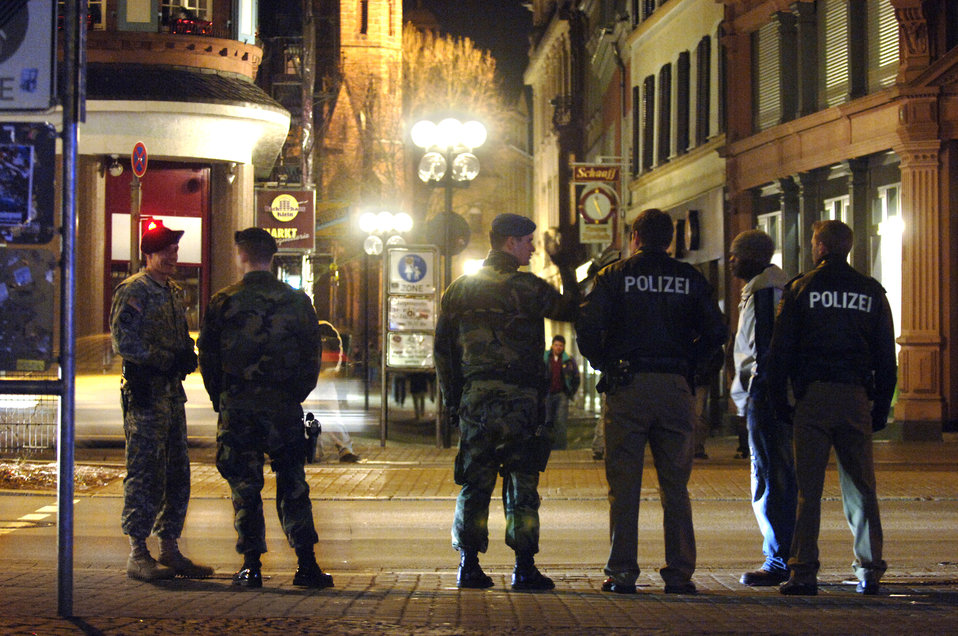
Going on patrol

Army, Air Force and contract German civilian policemen team up with members of the German Polizei to conduct a weekly foot patrol through the bar district in downtown Kaiserslautern where 54,000 Americans, the largest population living outside the U.S., share the city with 98,000 Germans.